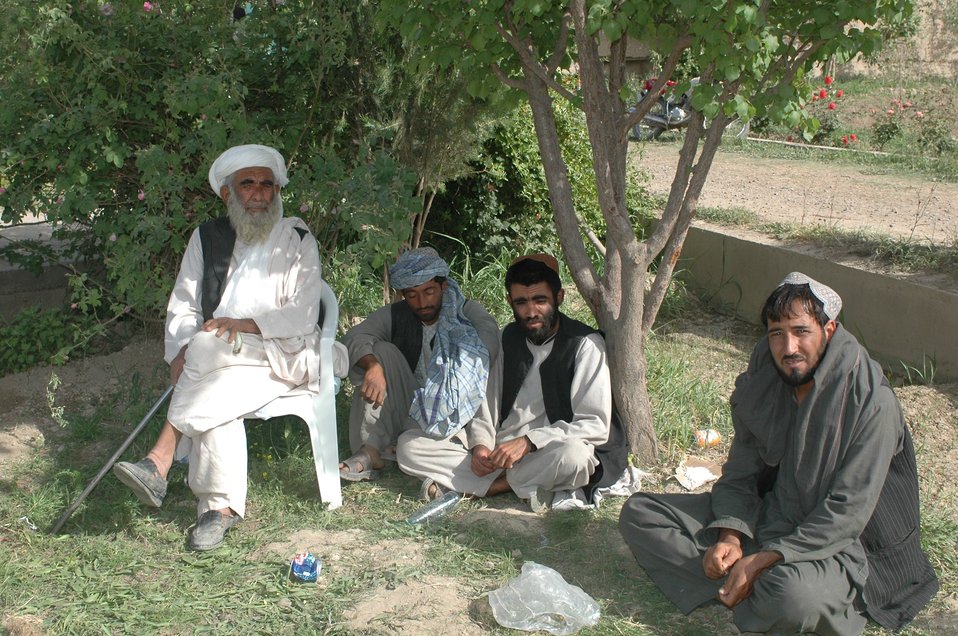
Dr Shah Visits Argandab April 10, 2010